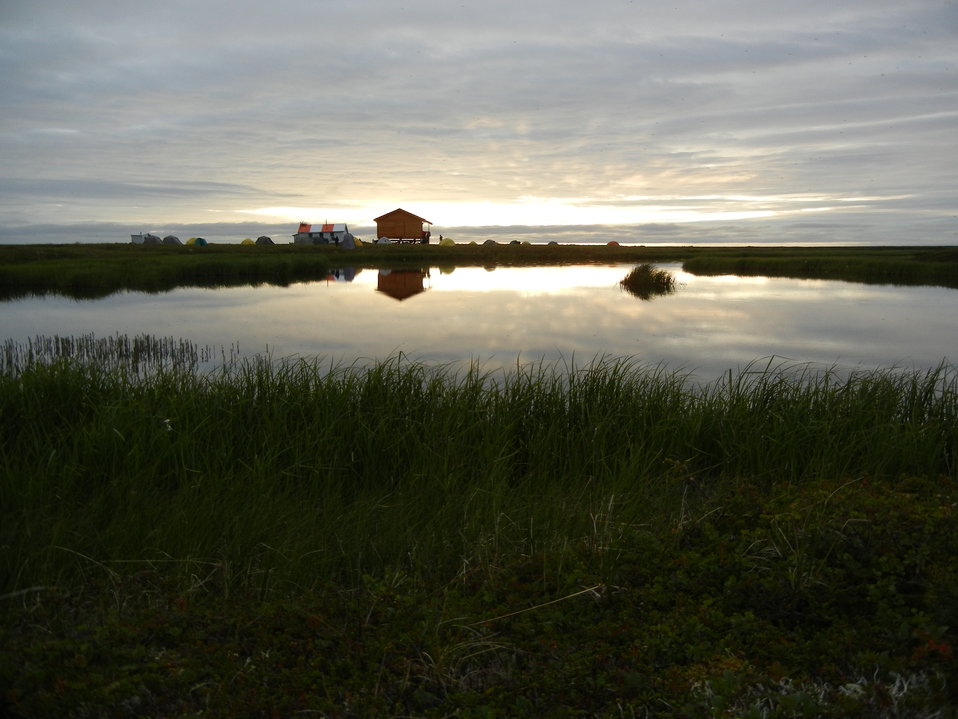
Old Chevak field camp

USFWS Yukon Delta NWR